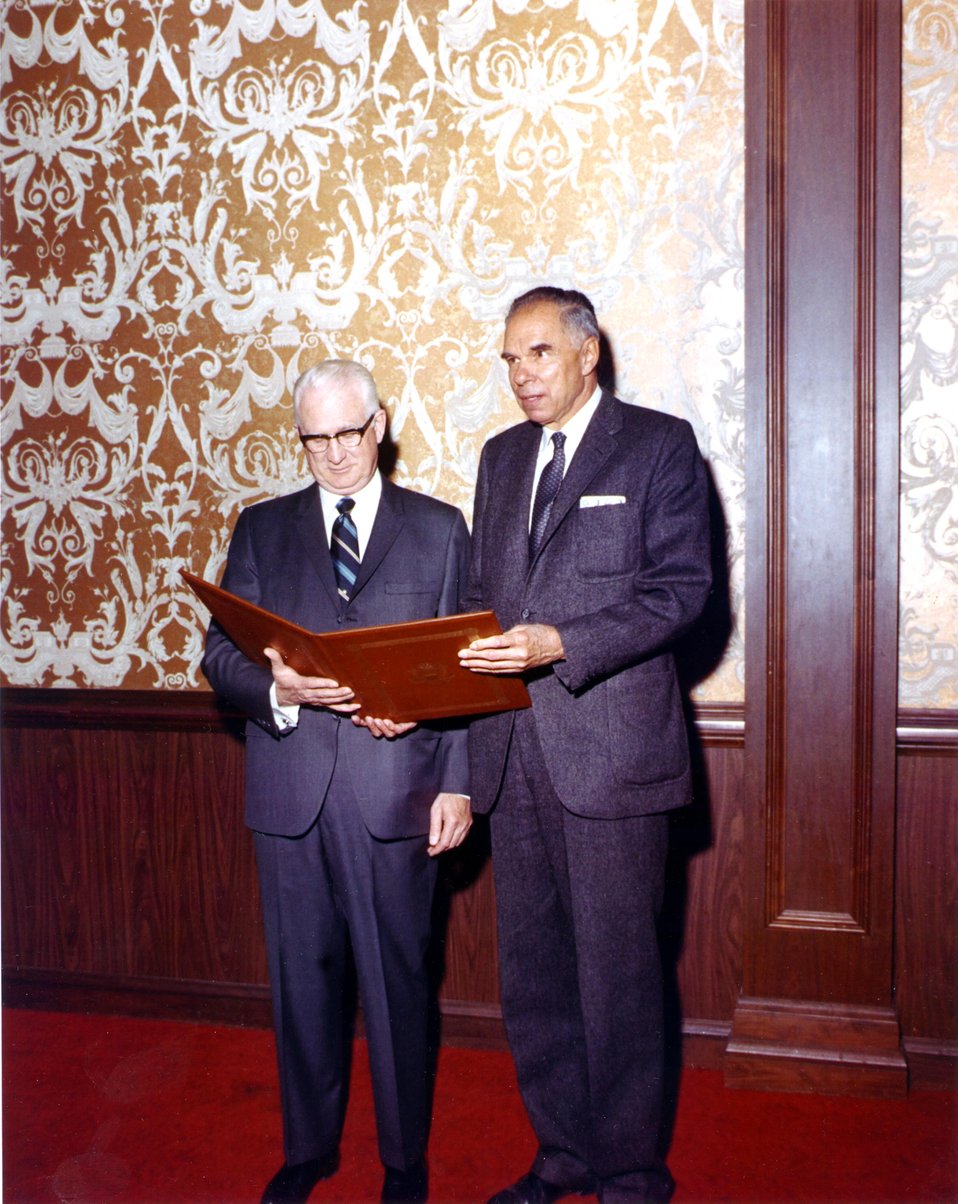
Fermi Award. Recipient: Walter Zinn. Date: Dec. 2, 1970.